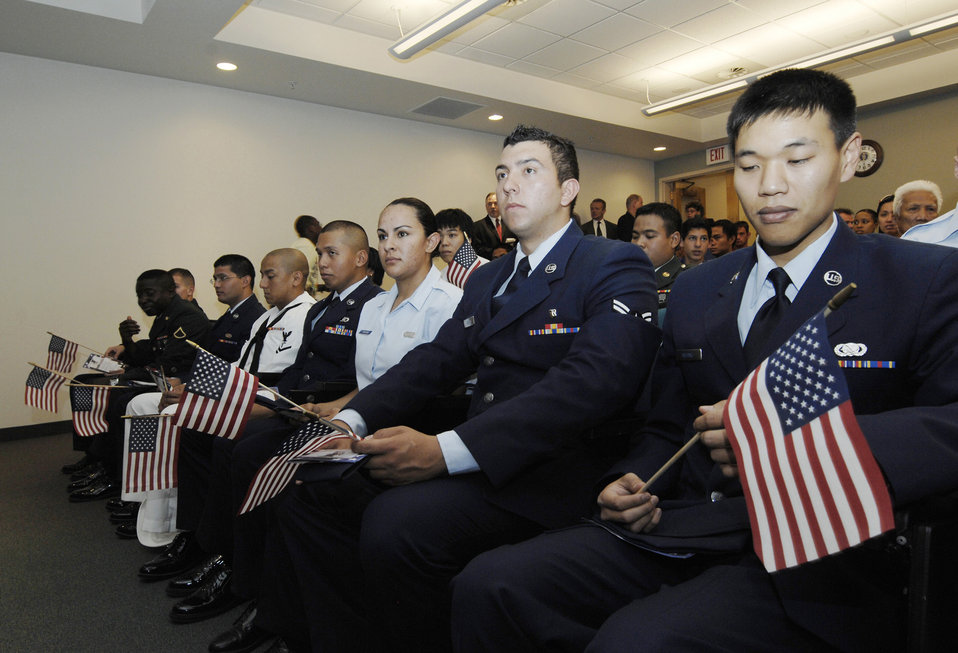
Nellis welcomes newest citizens during Freedom Fest

Eleven servicemembers wait to be sworn in during a naturalization ceremony July 4 at a Freedom Fest celebration in Nellis Air Force Base, Nev. The applicants included members of the Air Force, Army, Navy Reserve and Coast Guard. Members hailed from Armenia, Cameroon, Colombia, Mexico, the Philippines and South Korea.